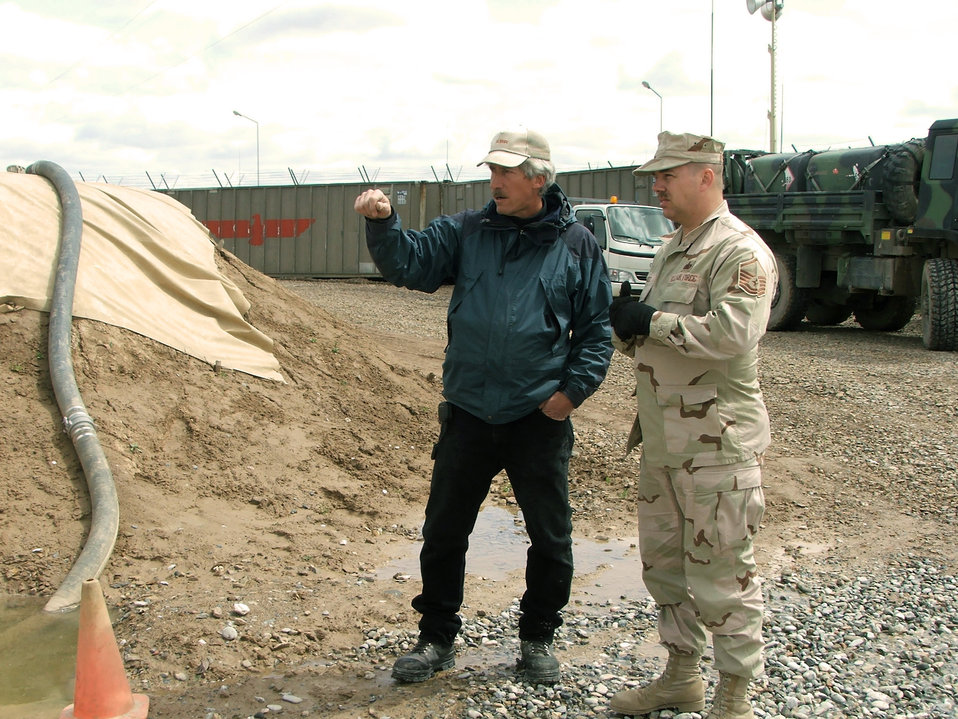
Joint fuels effort allows OEF airlift to keep rolling in Uzbekistan

KARSHI-KHANABAD, Uzbekistan -- Master Sgt. Scott Ross discusses road improvements with Steven Bullock. Mr. Bullock is the fuels foreman with the fueling contractor hired for base support, and Sergeant Ross is the 416th Expeditionary Mission Support Squadron's fuels management flight superintendent.